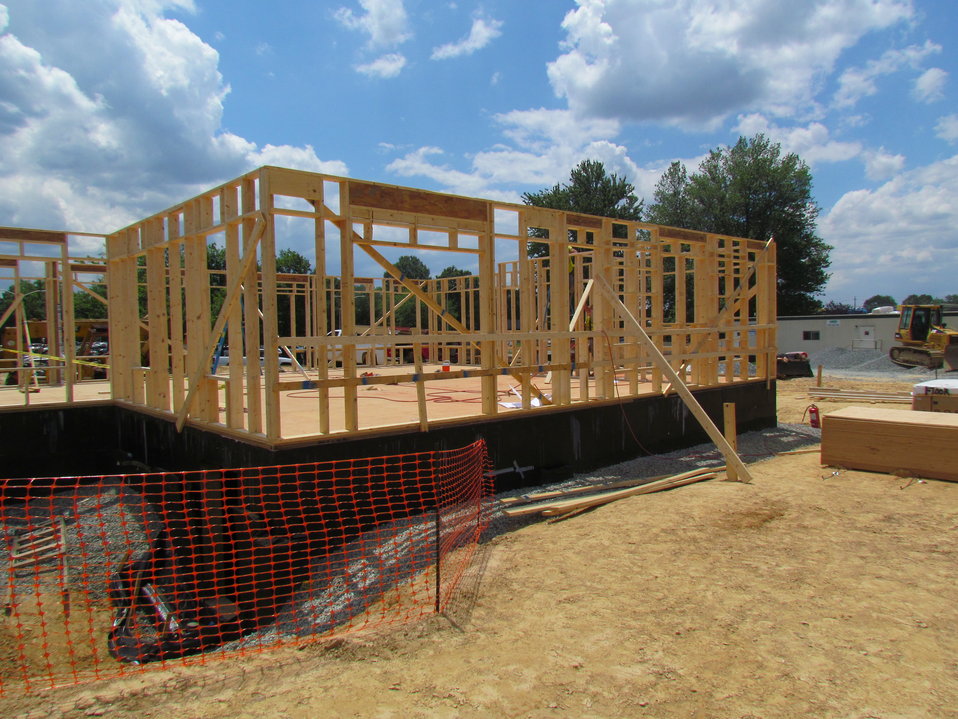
Net-Zero Energy Residential Test Facility - Photo showing first floor framing.